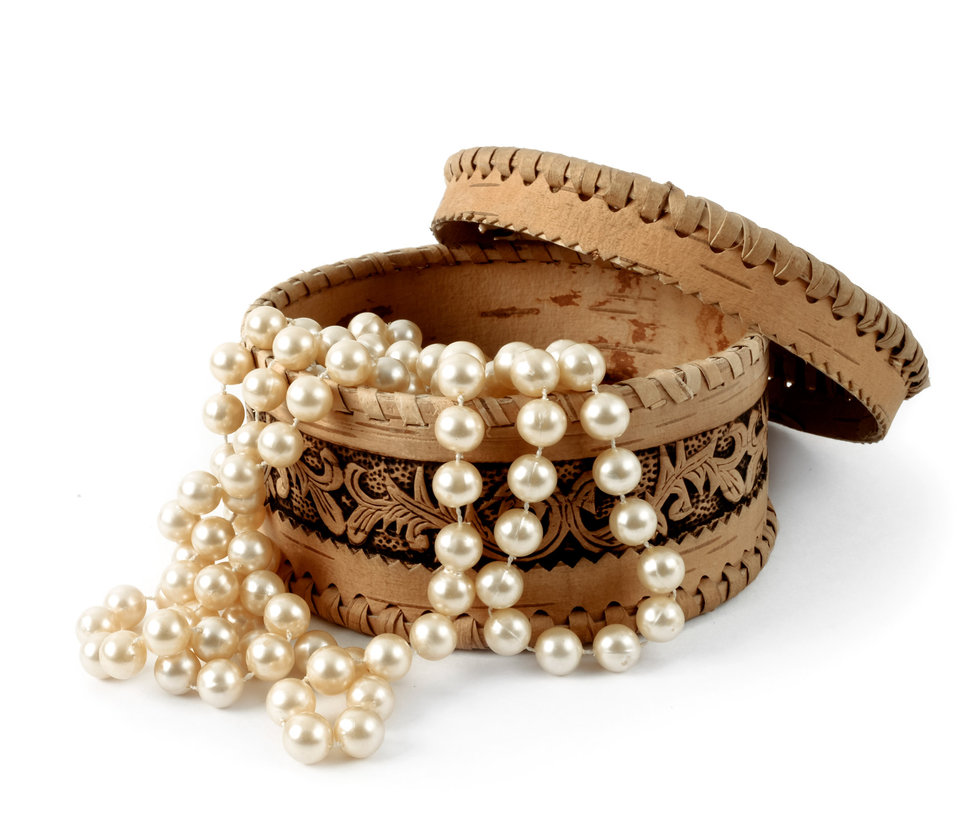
Casket with jewelry

Casket from birch bark on a white background.